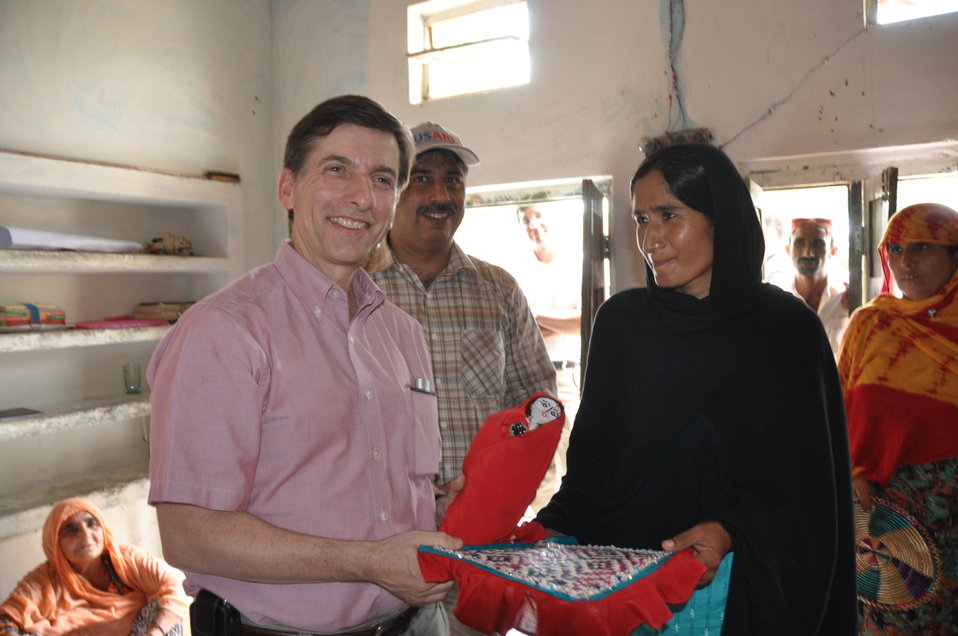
USAID Gender Equity Program